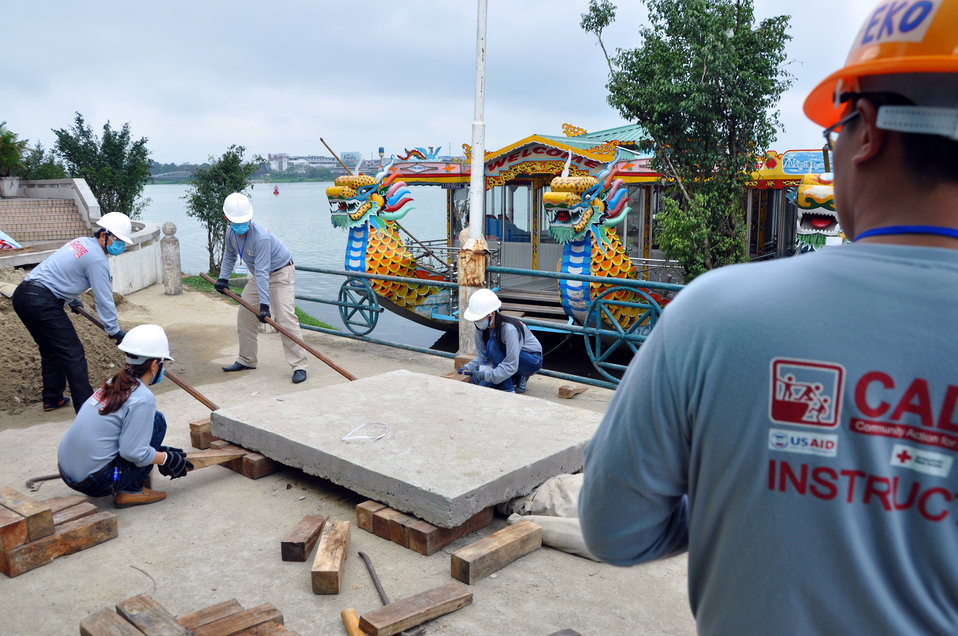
Disaster and Emergency Training Funded by USAID in Hue, Vietnam